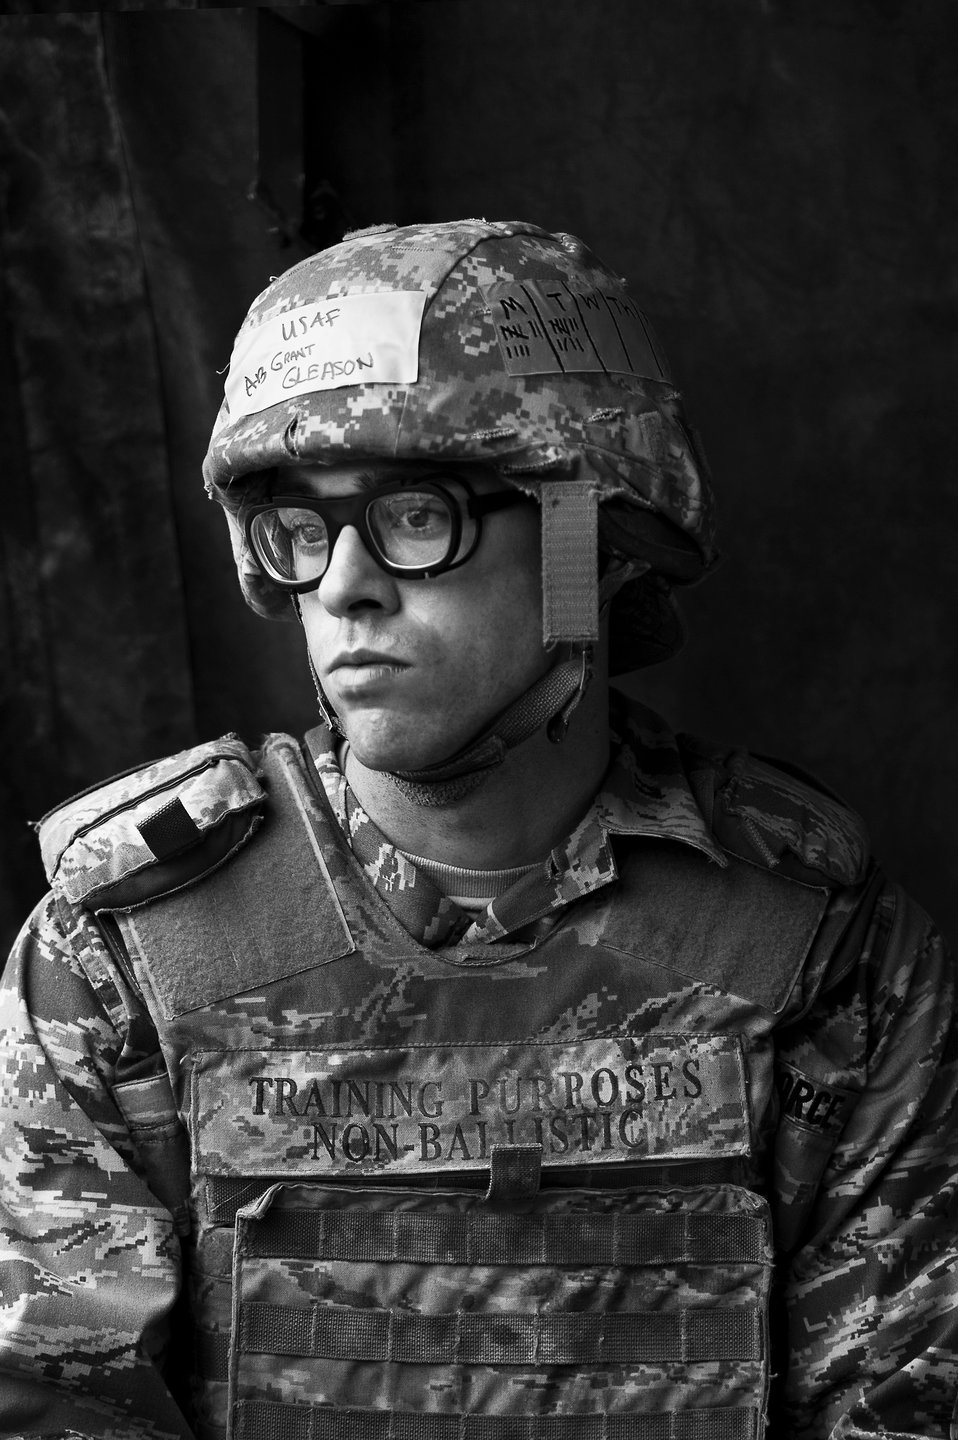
BEAST

Basic trainees go through their sixth week of Air Force basic military training at the Basic Expeditionary Airman Skills Training on May 25, 2011, at Lackland Air Force Base, Texas.